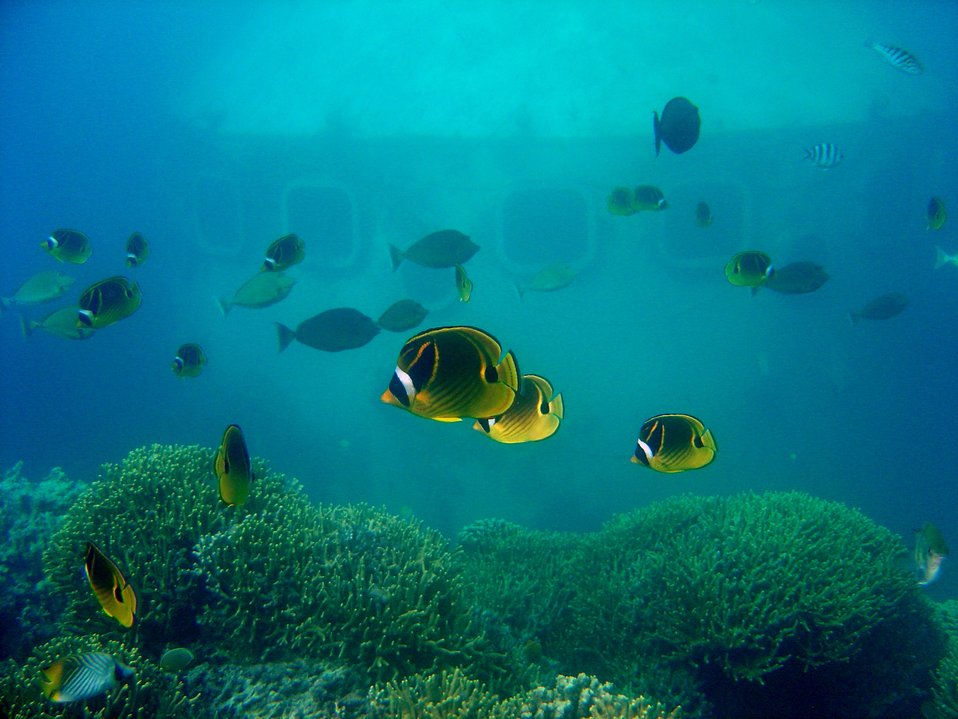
Raccoon butterflyfish (Chaetodon lunula).